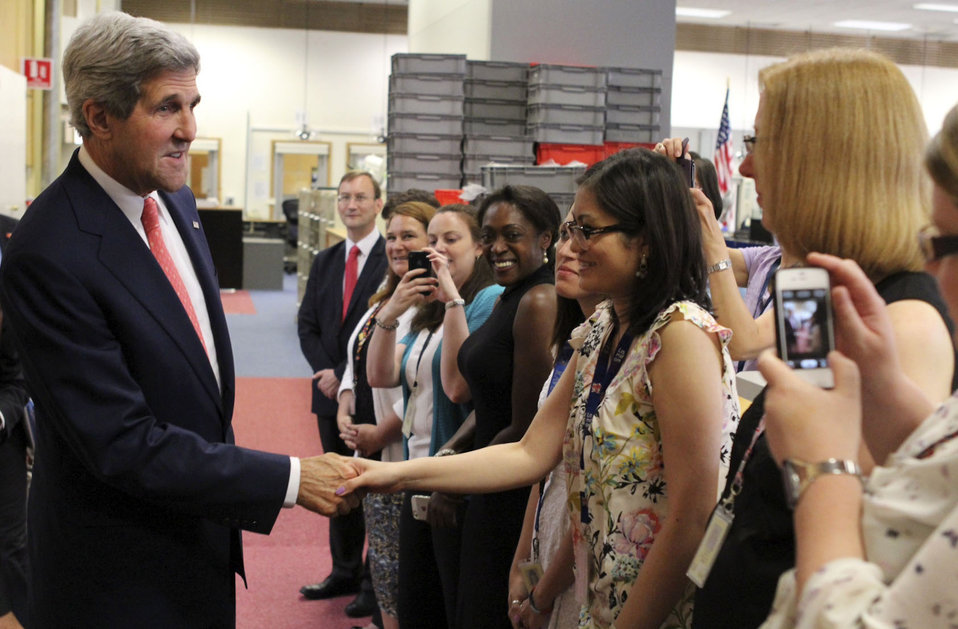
Secretary Kerry Shakes Hands With Embassy London Consular Staff

U.S. Secretary of State John Kerry shakes hands with employees in the Consular Affairs section during a visit to the U.S. Embassy in London, United Kingdom, to announce a visa policy change on August 2, 2013.